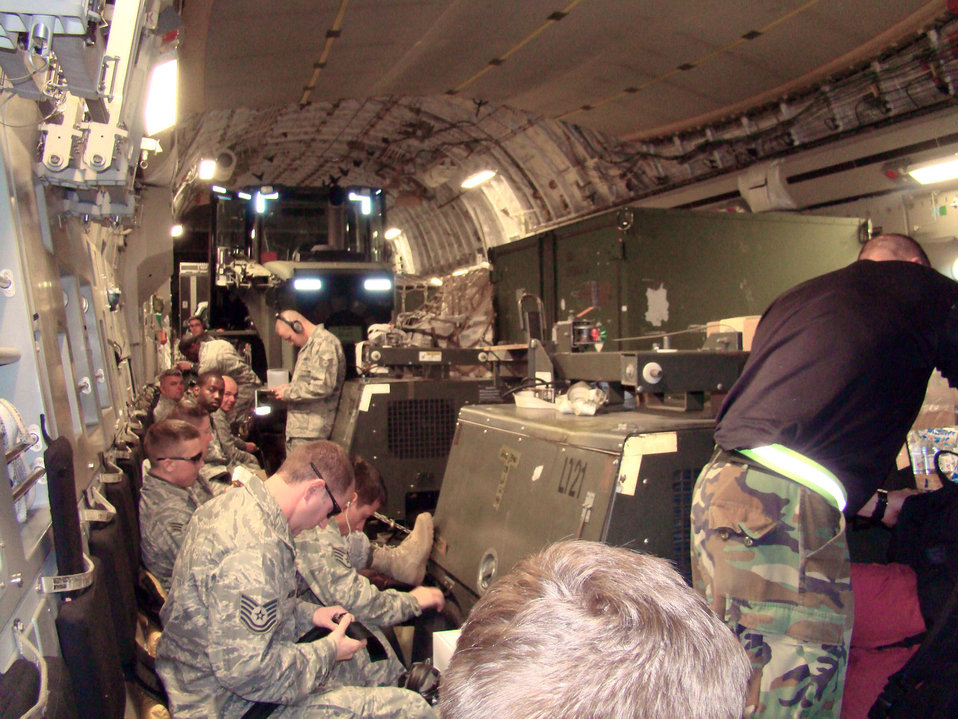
Aircrews deliver relief supplies to Haiti

Members of the 621st Contingency Response Wing depart on board a C-17 Globemaster III Jan. 14, 2010, from Joint Base McGuire-Dix-Lakehurst, N.J., and headed for the Toussaint L'Ouverture International Airport, Haiti. The 21 passengers and 44 tons of cargo were sent to Haiti on a 305th Air Mobility Wing C-17 from Joint Base McGuire to support relief operations in response to a devastating earthquake in the area.